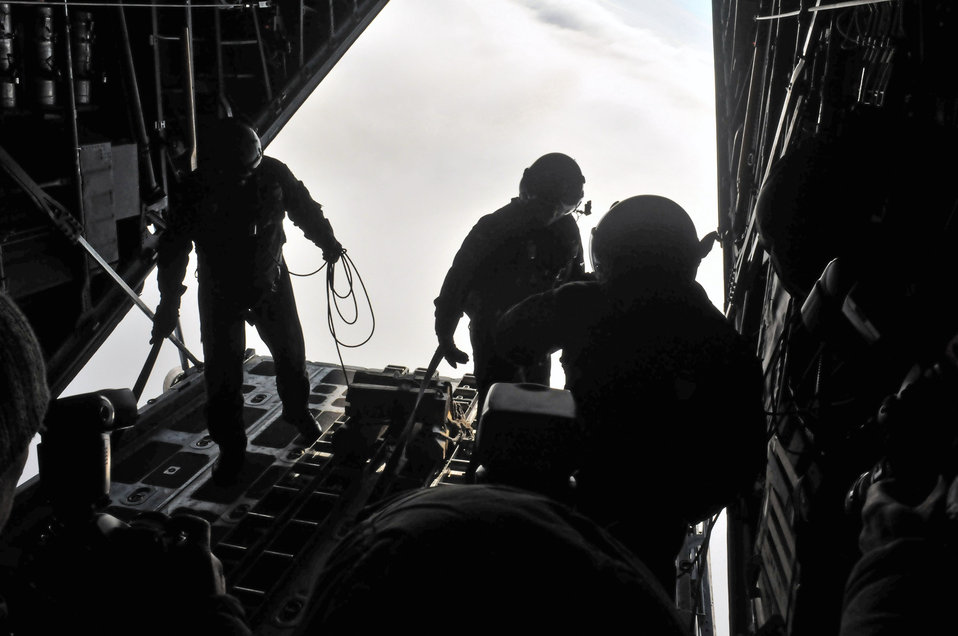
Ramstein Airmen show C-130 capabilities to Polish military

Loadmasters from the U.S. and Polish air forces demonstrate a low-level airdrop from a C-130 Hercules Jan. 28 near Powdiz Air Base, Poland. The demonstration gave U.S.-trained Polish crewmembers a chance to practice their new skills in an operational setting.